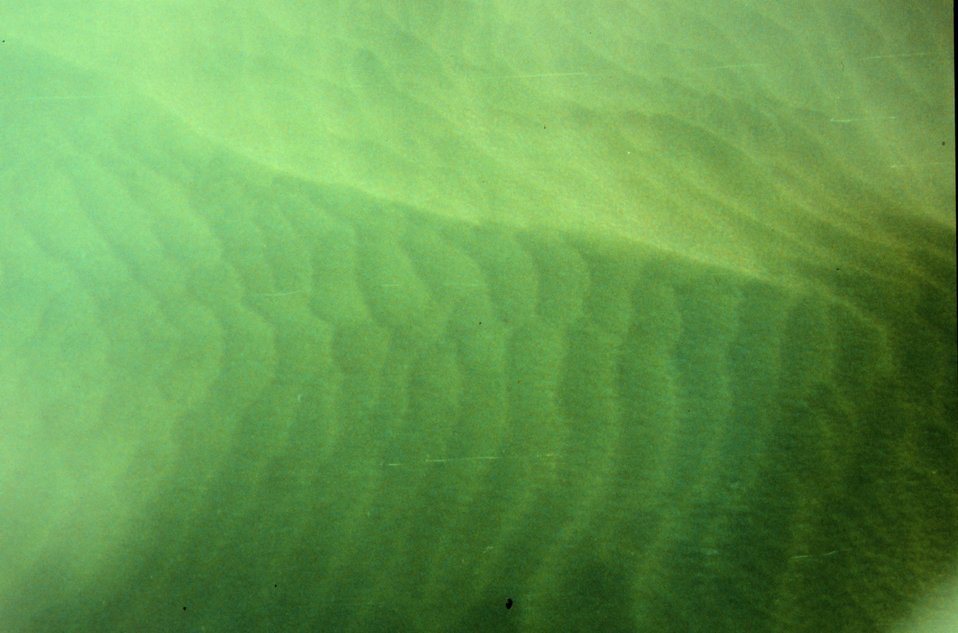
Giant sandwaves as seen from NOAA helicopter during SHOALS Lidar survey.